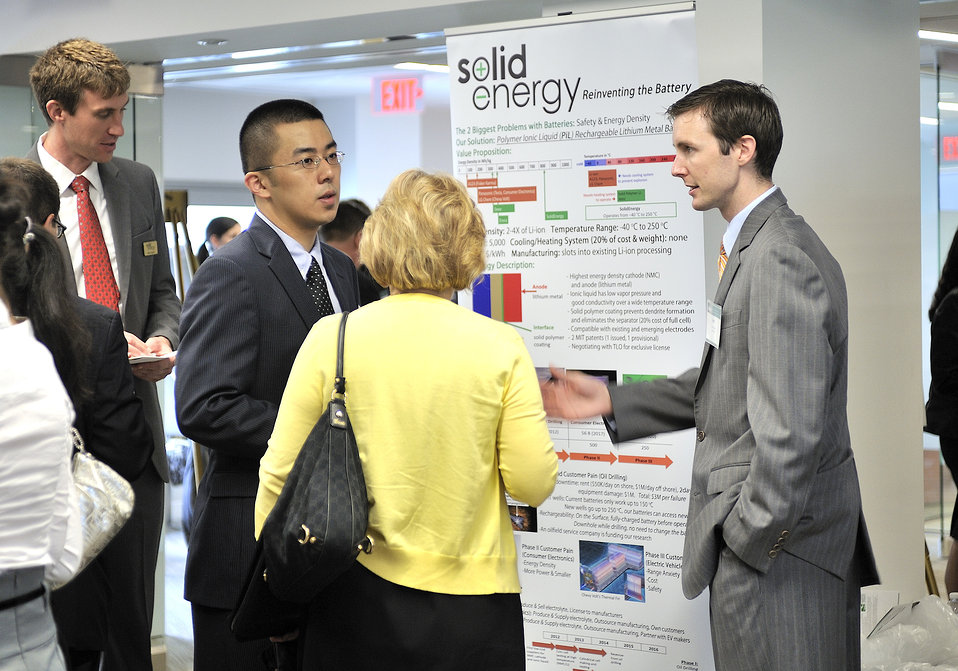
National Clean Energy Business Plan Competition

The National Clean Energy Business Plan Competition inspired nearly 300 university teams across the country to create new businesses to commercialize promising energy technologies developed at U.S. universities and the National Laboratories.